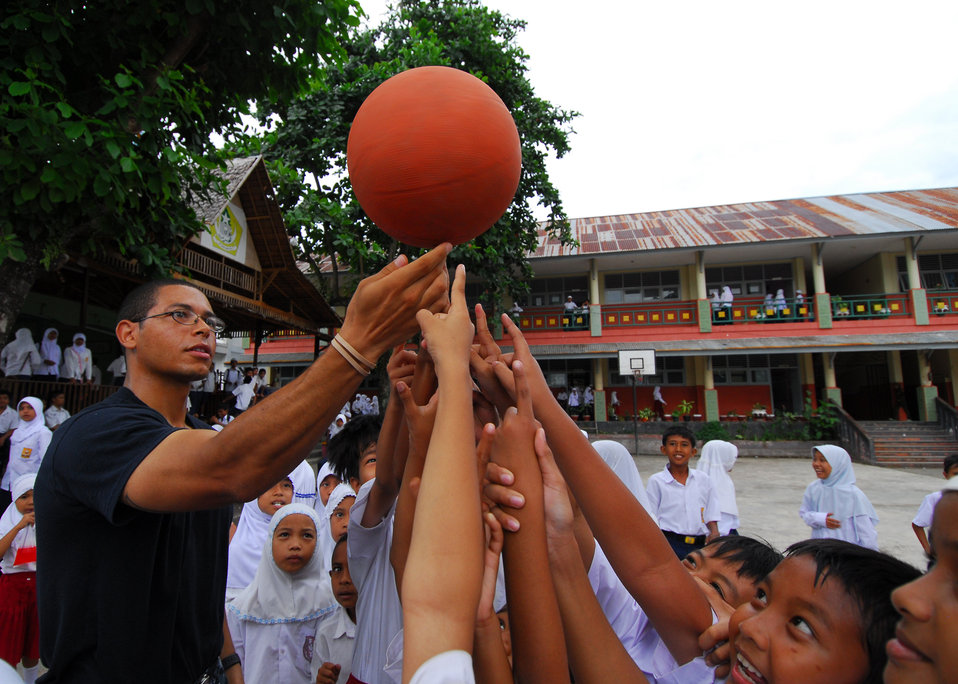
Mass Communication Specialist 3rd Class Matthew Jackson teaches children how to spin a basketball on their fingertip during a community service event at Kalumpang Kota Orphanage and School in Ternate, Indonesia, on July 19, 2010. The Military Sealift Command hospital ship USNS Mercy (T-AH 19) is in the North Maluku Islands conducting Pacific Partnership 2010, the fifth in a series of annual U.S. Pacific Fleet endeavors conducted in Indonesia as a disaster relief exercise aimed at strengthening regional partnerships.